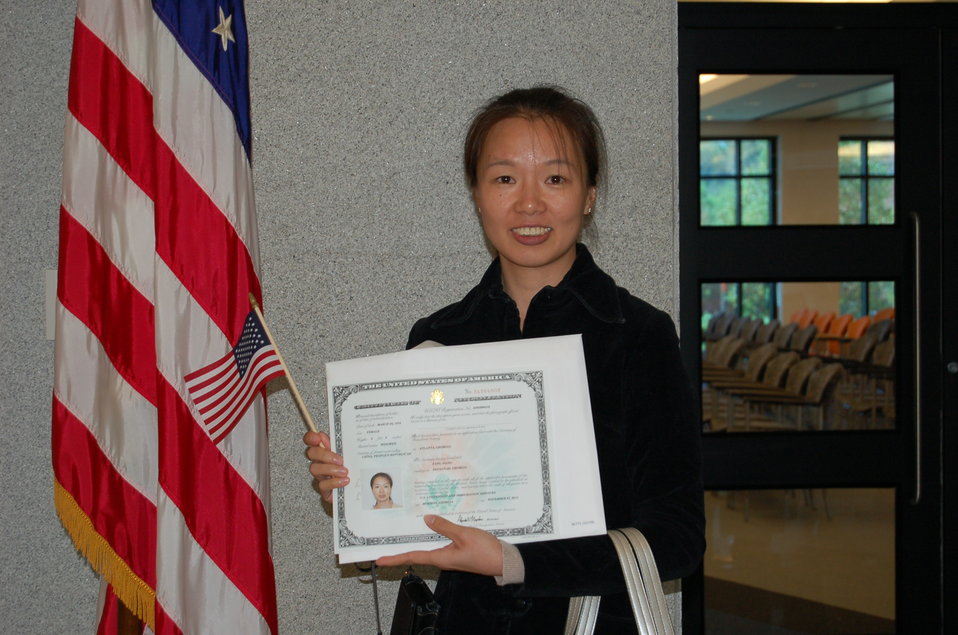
New Citizens